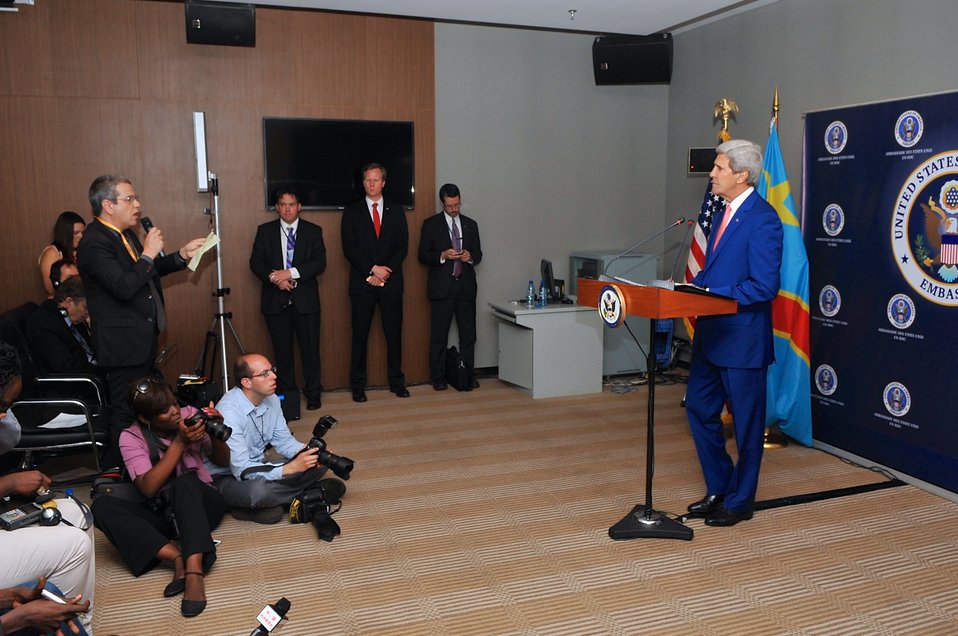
Secretary Kerry Fields Question From AFP Reporter Revise in Kinshasa

U.S. Secretary of State John Kerry fields a question from reporter Nicolas Revise of Agence France-Presse during a news conference that followed his meeting with Democratic Republic of Congo President Joseph Kabila in Kinshasa on May 4, 2014.